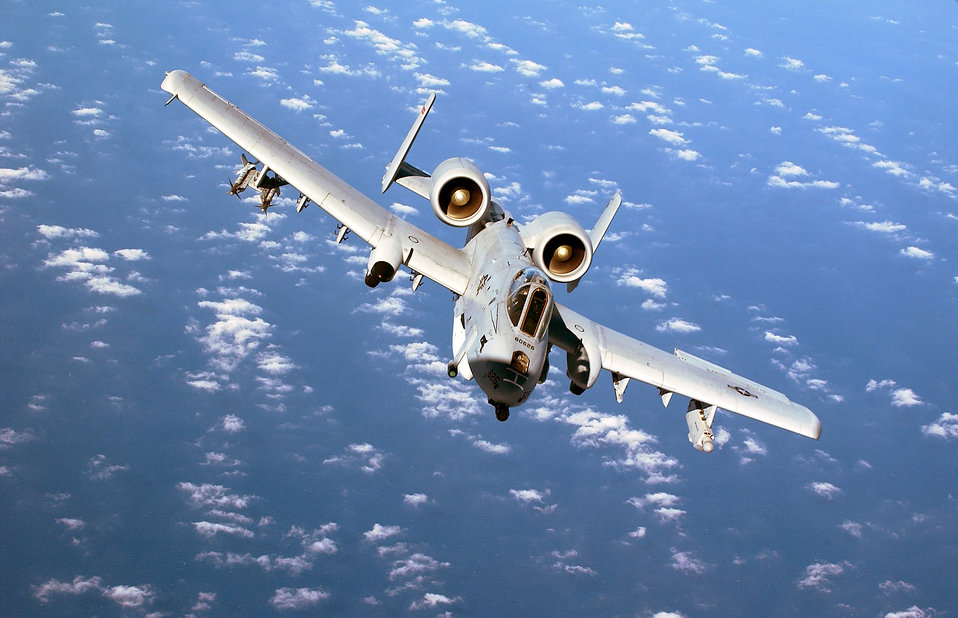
OVER THE MEDITERRANEAN SEA -- An A-10 Thunderbolt II from the 104th Fighter Wing, Barnes Municipal Airport, Westfield Mass., Massachusetts Air National Guard, banks while flying accross the Mediterranean Sea enroute to a forward operating base.